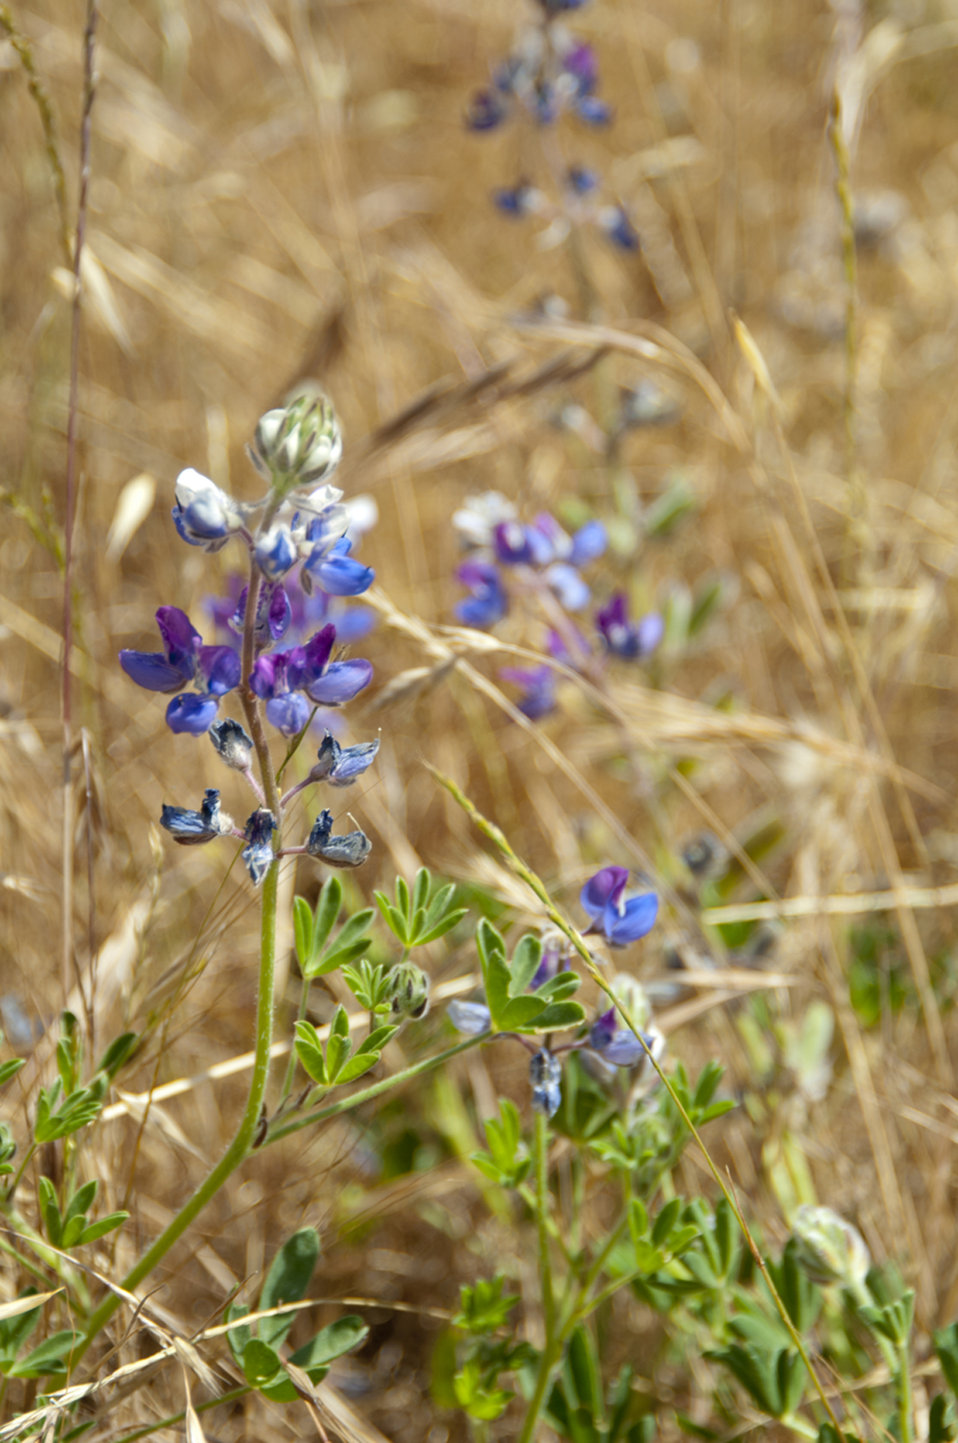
Mission Blue Butterfly Host plant - Lupin (2-sm)

photo credit - Sarah Swenty/USFWS
The endangered Mission blue butterfly depends on three species of lupine for food and shelter when the butterfly is in its larval stage.